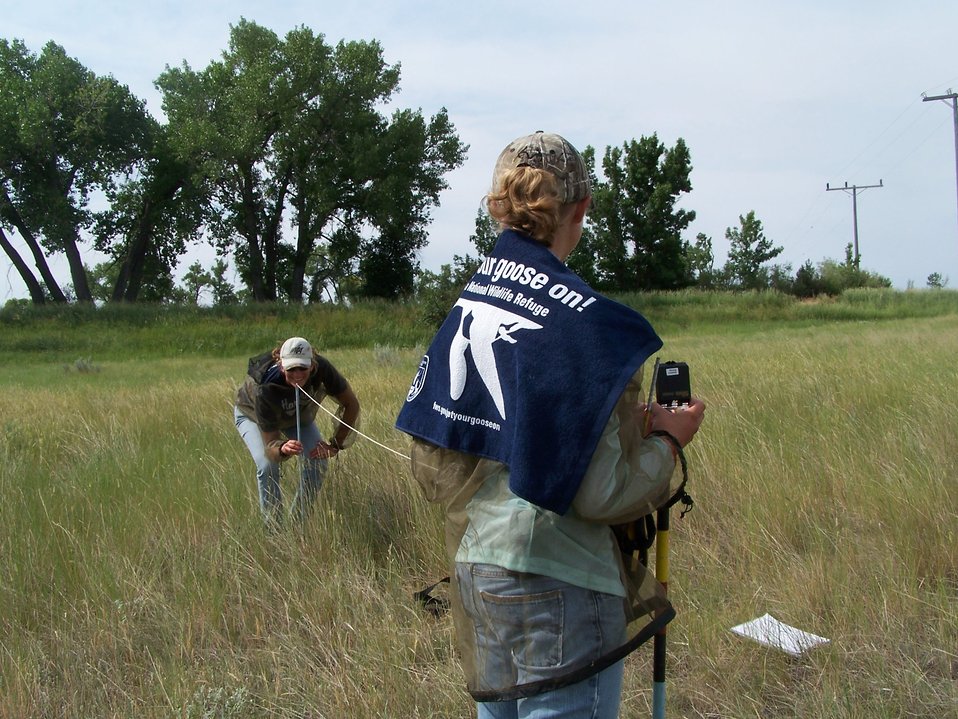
Get Your Goose On!

Bowdoin NWR Summer Technicians doing robel pole reading during vegetation transects with the GYGO towel